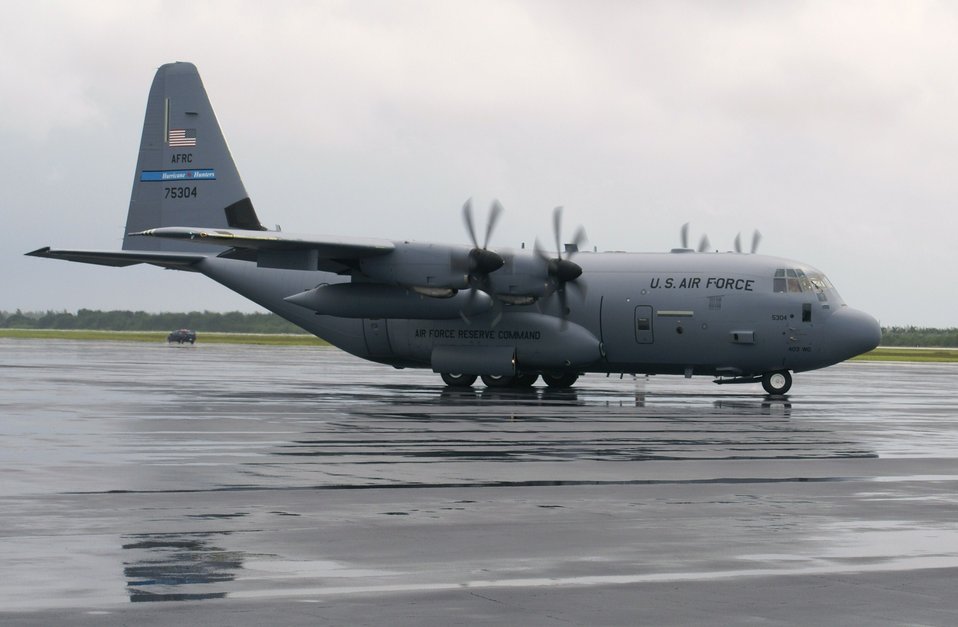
AFNORTH Hurricane Hunters on the move

Air Force WC-130J aircraft and reservists from the 403rd Wing at Keesler Air Force Base, Miss., continue to fly daily weather reconnaissance missions into Hurricane Gustav and Tropical Storm Hannah from Homestead Air Reserve Base, Fla. The Hurricane Hunters aid the National Weather Service in providing the storms' projected path to the American public and are the only operational unit in the world flying weather reconnaissance on a routine basis.